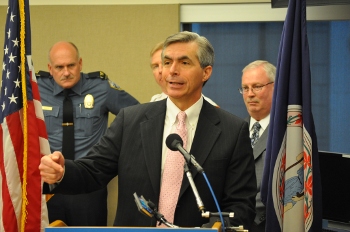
Next gen Jamie Barnett

Next Generation 9-1-1; Arlington, VA. November 23, 2010